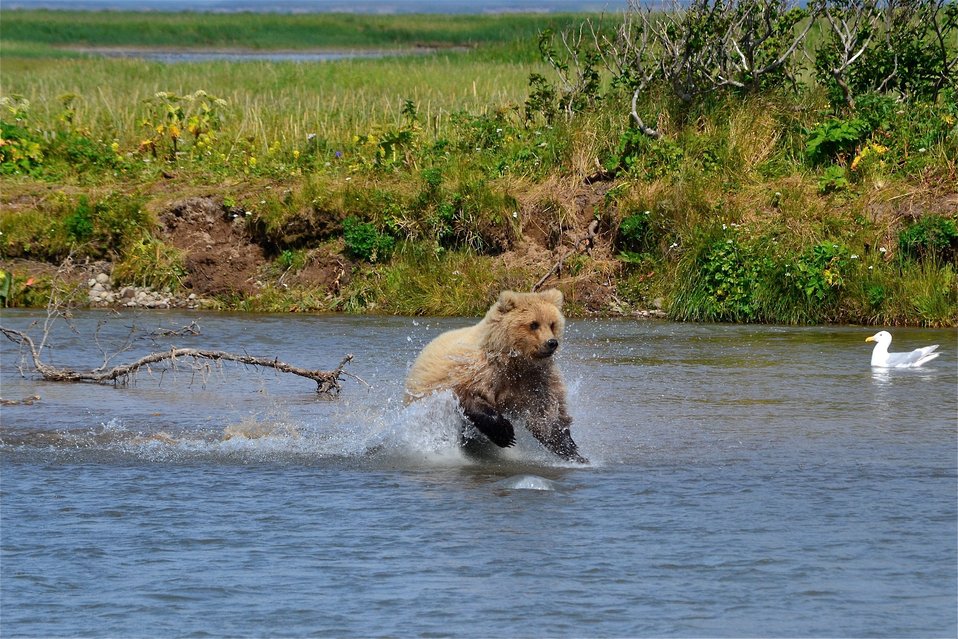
brown bear chasing salmon

Russell Creek, Cold Bay, AK